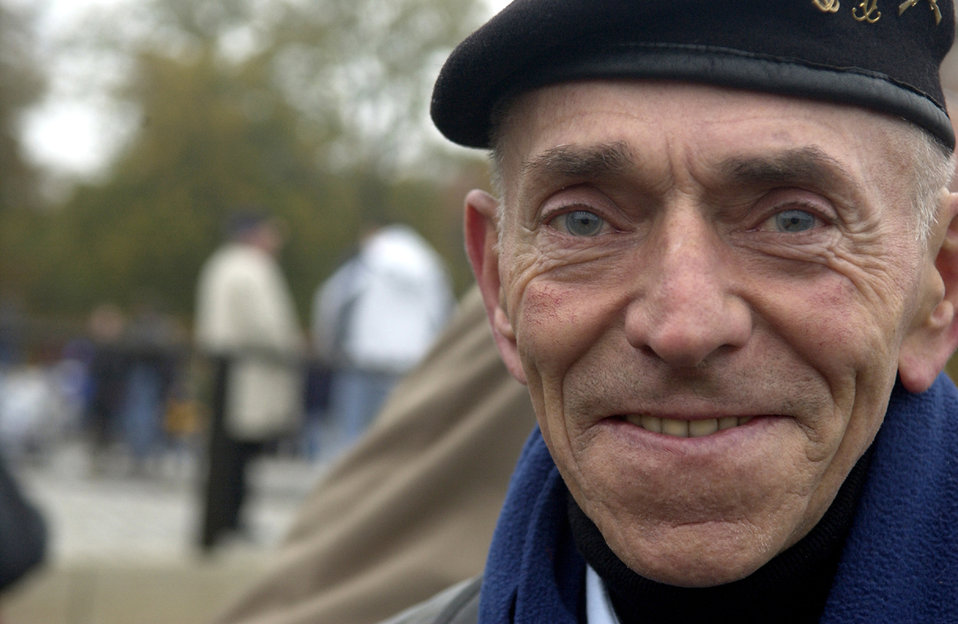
Spangdahlem Airmen honor Veterans

Robert Barthel, president of the Friends of Patton's 26th Infantry Division, attends a Veterans Day ceremony at the Luxembourg American Cemetery and Memorial Nov. 11.